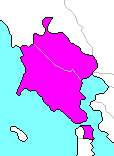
Map of California's 3rd State Senate district